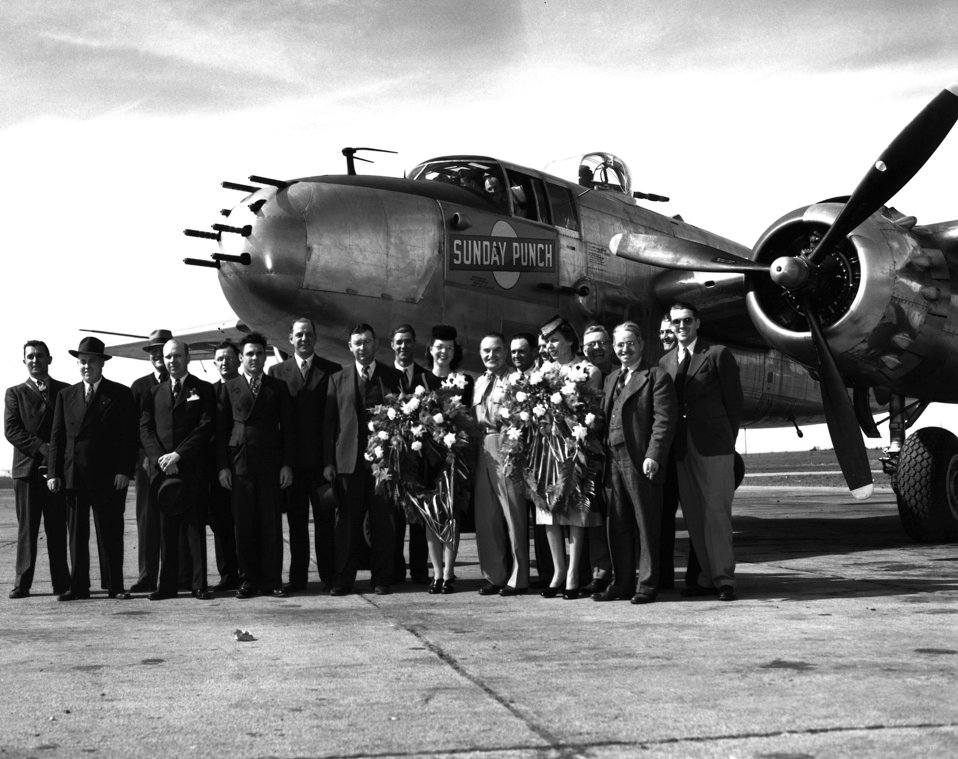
Sunday Punch B-25

Pro 303-12 DOE photo Ed Westcott 3-18-1945 'Sunday Punch' Mitchell B-25 Bomber given to the Army Air Force by K-25 Construction workes McGhee Tyson Airport Tennessee